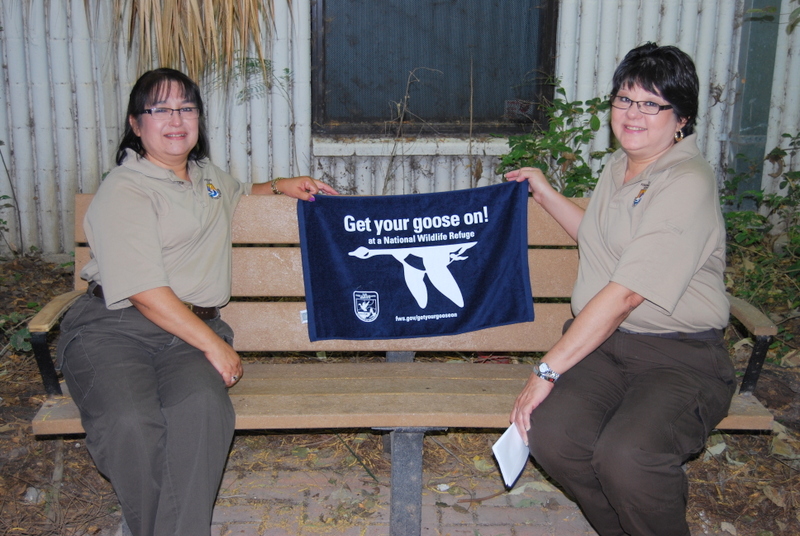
Get Your Goose On!

Photo taken at Santa Ana National Wildlife Refuge in southern Texas.